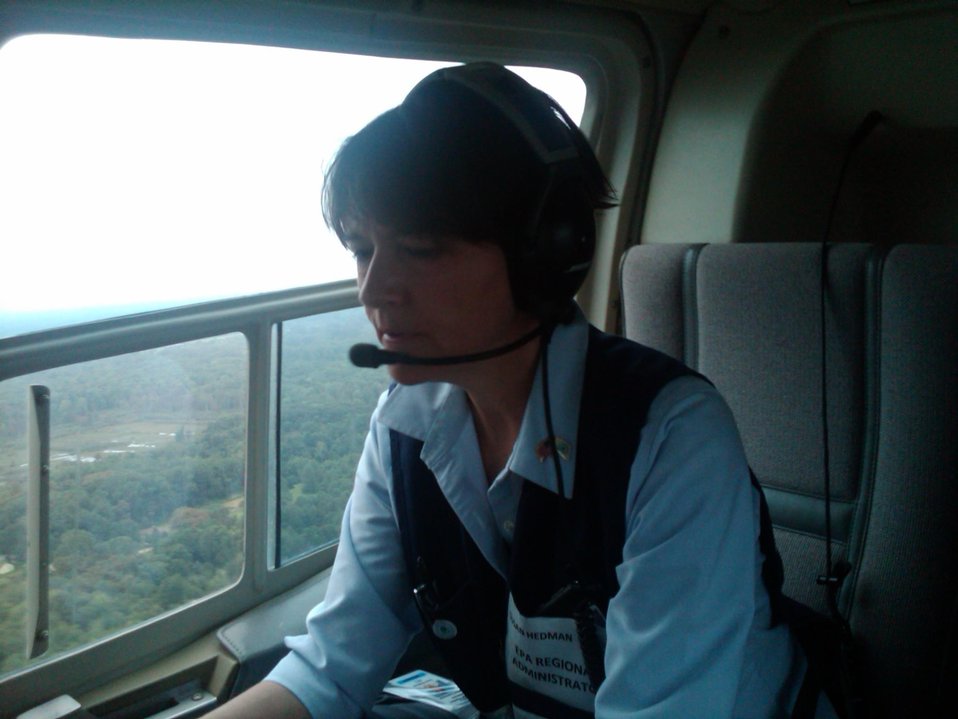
RA overflight

EPA Regional Administrator Susan Hedman flies over the Enbridge oil spill in a helicopter.